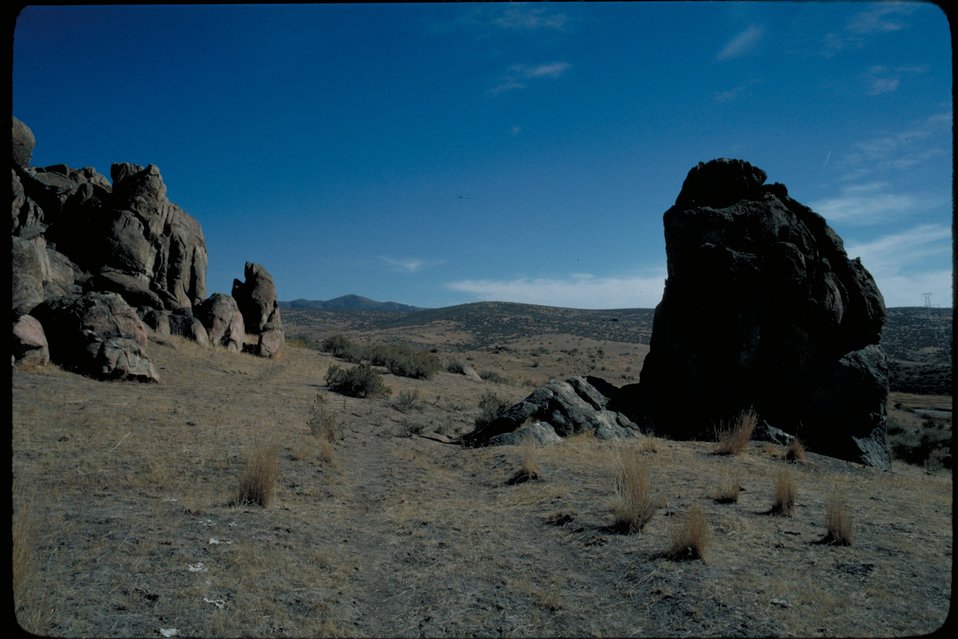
Oregon Trail north of Ditto Creek Lower Snake River District